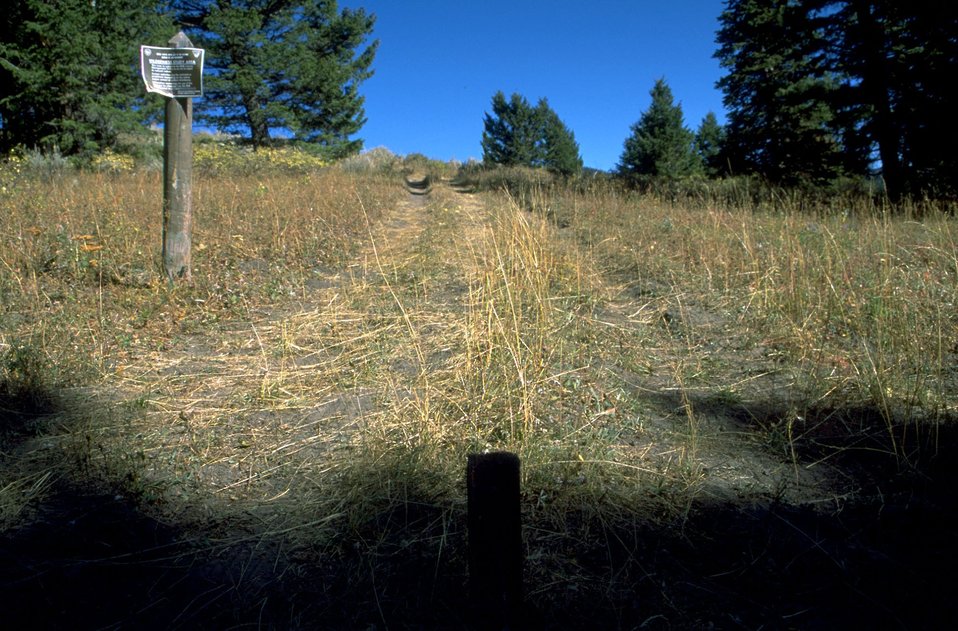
Wilderness Study Area sign adjacent to roadway